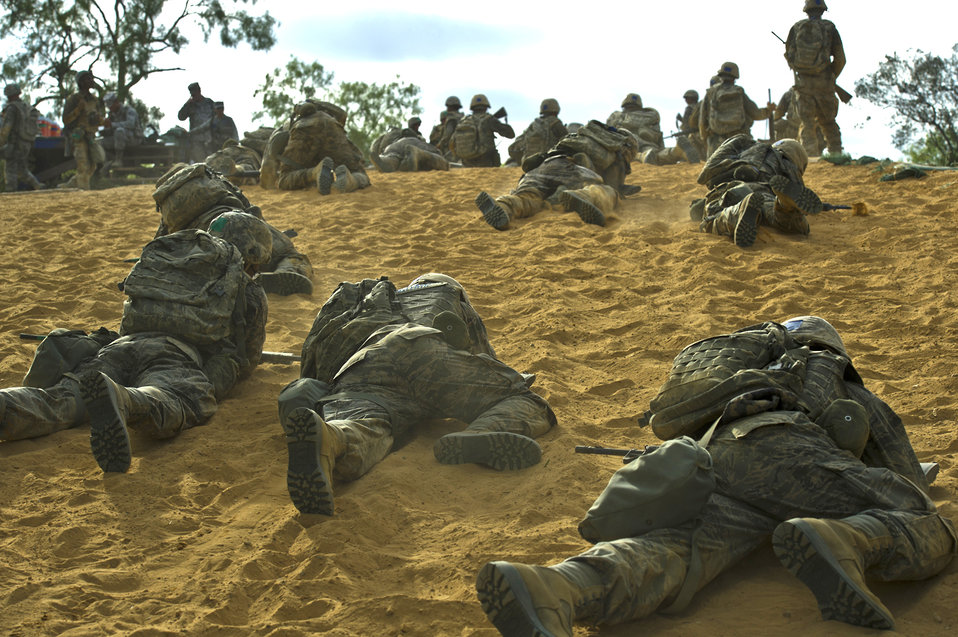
Kicking up sand

Air Force Basic Military Training trainees low crawl through an obstacle course during the Creating Leaders, Airmen and Warriors course July 27, 2011, at Medina Annex in San Antonio, Texas. In BMT, trainees learn the critical importance of discipline, teamwork and foundational knowledge needed to succeed as Airmen.